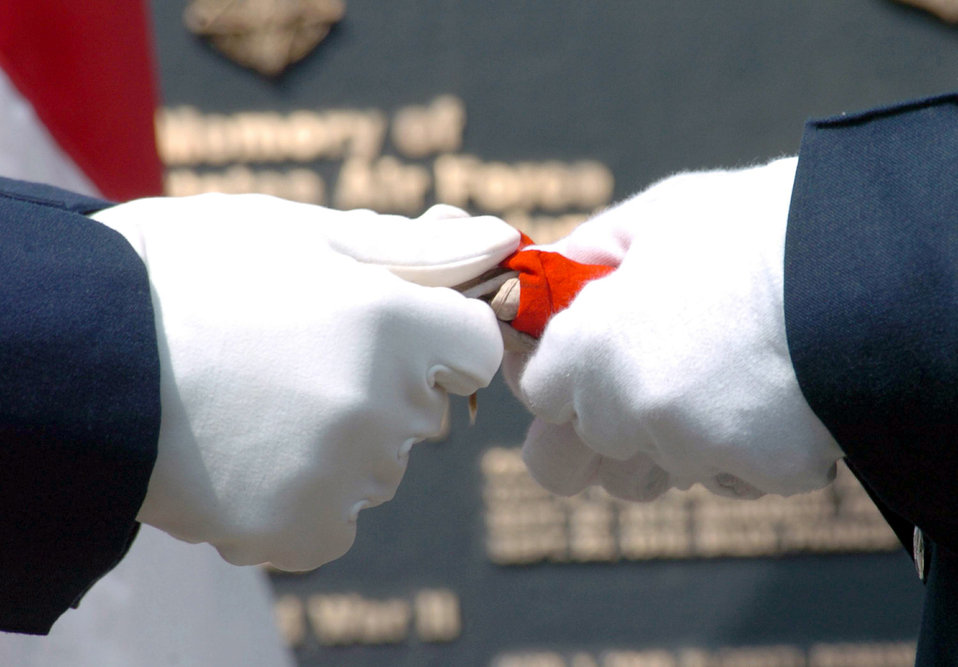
Honoring the past

YOKOTA AIR BASE, Japan -- Airmen from the 374th Airlift Wing Honor Guard fold a Japanese flag belonging to Ippei Saeki who died fighting against American forces during World War II. The flag was presented to his younger brother during a ceremony here Aug. 6.